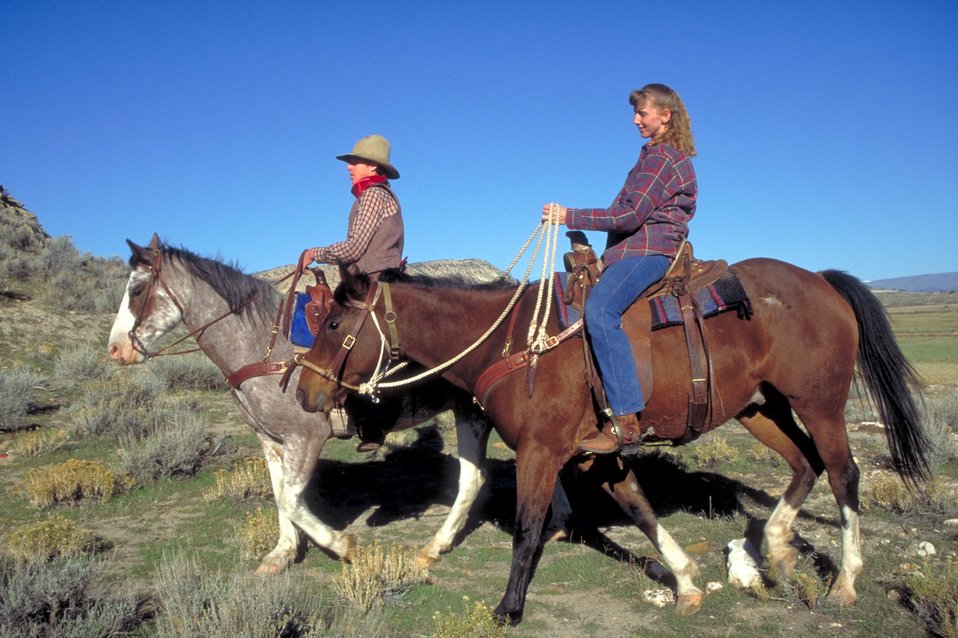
Working cowboys living near Vernal, Utah.